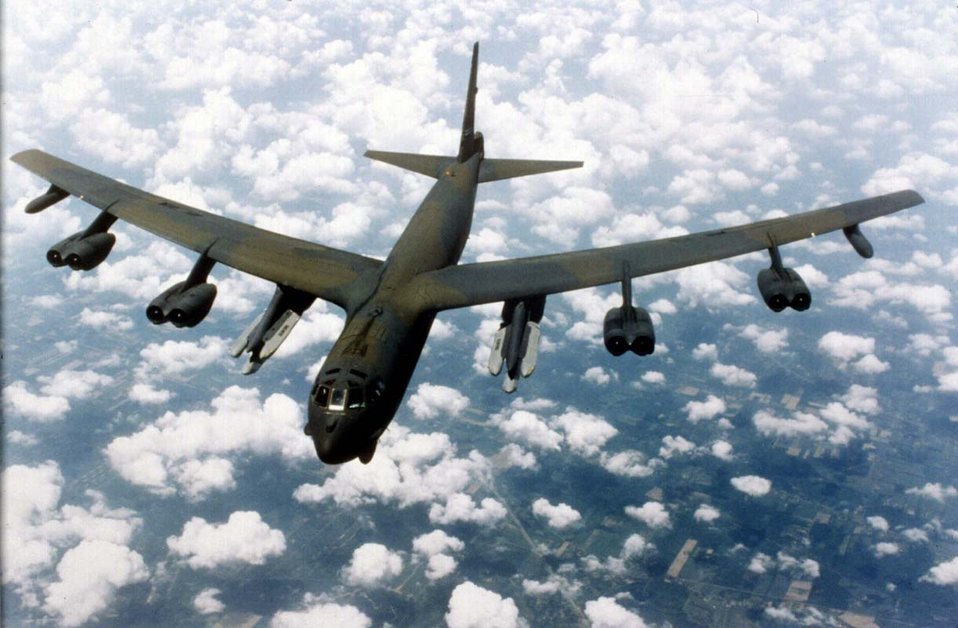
B-52 in flight

FILE PHOTO -- Air Combat Command's B-52 is a long-range, heavy bomber that can perform a variety of missions. The bomber is capable of flying at high subsonic speeds at altitudes up to 50,000 feet. It can carry nuclear or conventional ordnance with worldwide precision navigation capability. In a conventional conflict, the B-52 can perform air interdiction, offensive counter-air and maritime operations. During Desert Storm, B-52s delivered 40 percent of all the weapons dropped by coalition forces. It is highly effective when used for ocean surveillance, and can assist the U.S. Navy in anti-ship and mine-laying operations. Two B-52s, in two hours, can monitor 140,000 square miles of ocean surface.